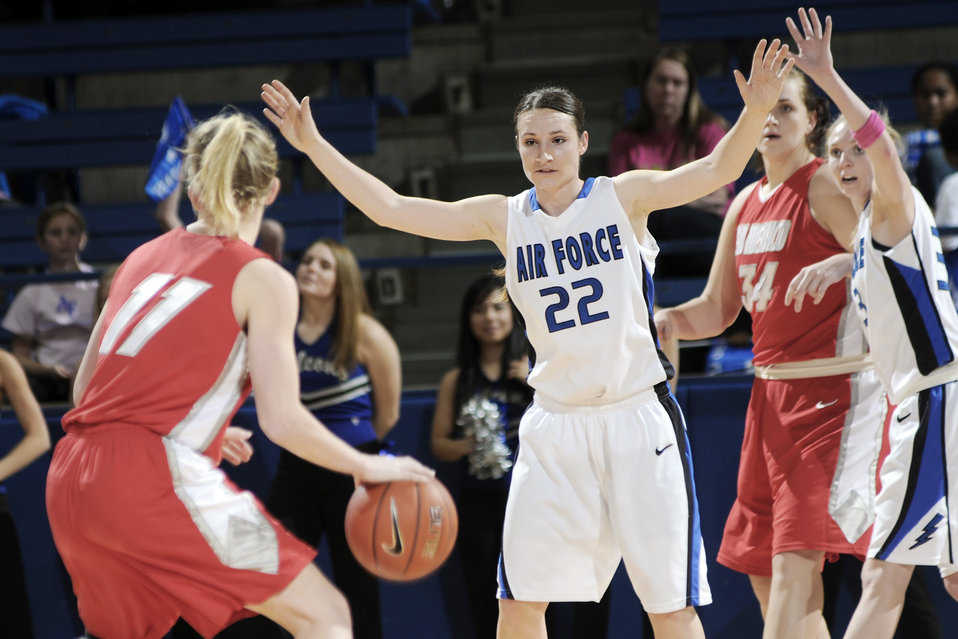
Photo essay: Academy women?s basketball falls to New Mexico

U.S. Air Force Academy junior guard Raimee Beck applies pressure against the University of New Mexico?s Lauren Taylor Feb. 20, 2010, at Clune Arena in Colorado Springs, Colo.. Beck contributed 11 points and nine rebounds for Air Force as the Falcons lost 65-46.